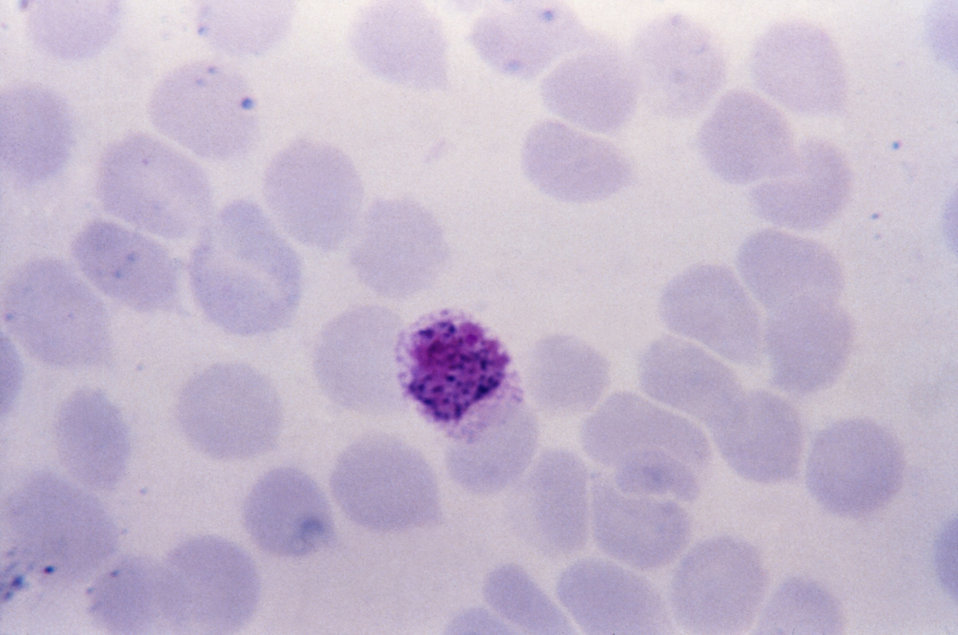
This thin film Giemsa stained micrograph depicts a Plasmodium vivax microgametocyte.